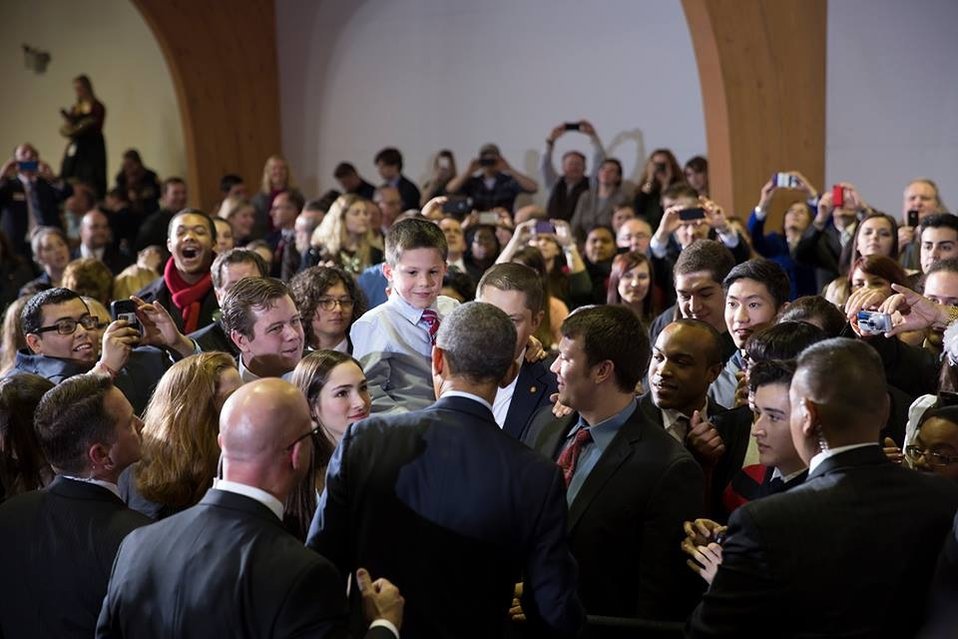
President Barack Obama meets with attendees after signing the Agricultural Act of 2014 at Michigan State University, Lansing Michigan, on Friday, Feb. 7, 2014.